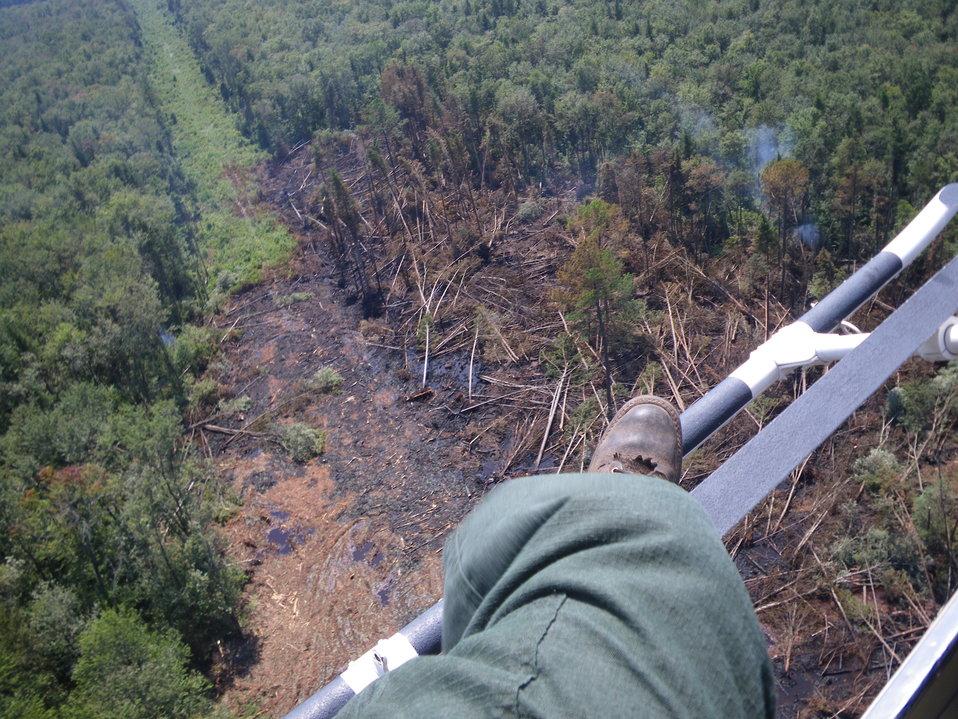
Fire growth after Irene pullout

Suffolk, VA, August 2011: A helicopter flight over the Lateral West Fire burning on Great Dismal Swamp National Wildlife Refuge after Hurrican Irene passed reveals that the fire grew by about 2 acres after firefighters evacuated the fireline for safety purposes in advance of the storm. The foot of rain the area received was still not enough to fully extinguish the fire, which burned over 6,300 acres.